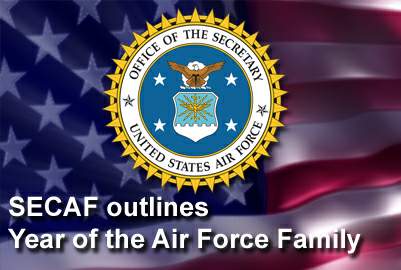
SECAF outlines Year of the Air Force Family

Secretary Michael B. Donley and Air Force Chief of Staff Gen. Norton Schwartz designated July 2009 to July 2010 as